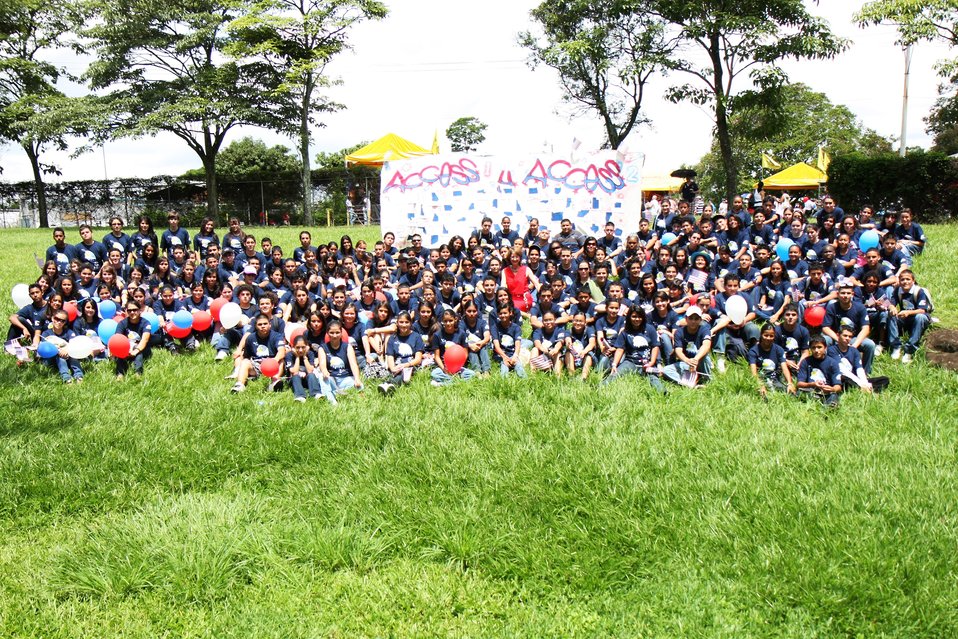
Students Pose for a Group Photo

Students from U.S. Embassy San Jose in Costa Rica's English Access Microscholarship Program pose for a group photo during the U.S. Independence Day celebration on July 2, 2010, in San Jose, Costa Rica.